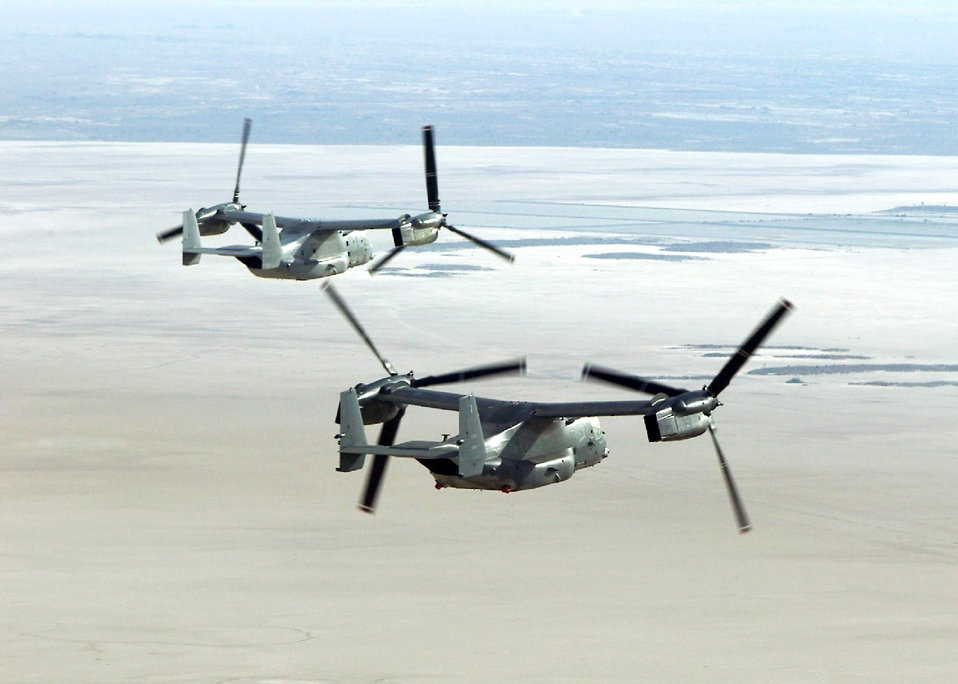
Air Force receives third Osprey

OVER EDWARDS AIR FORCE BASE, Calif. -- The first two Air Force CV-22 Osprey test aircraft fly in formation here. A third Osprey arrived at the base Feb. 26.